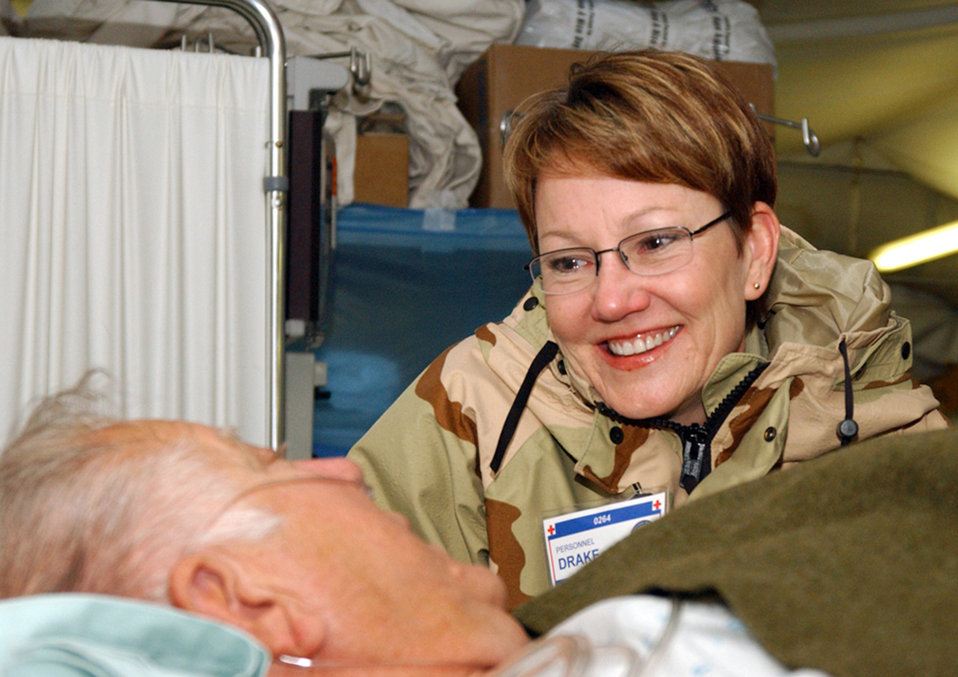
Staging facility puts wounded warriors on ?road to recovery?

Lt. Col. Beth Drake keeps company with Sam Lee on Tuesday, April 4, 2006, at the Air Force Theater Hospital at Balad Air Base, Iraq, while he waits to be moved to an aircraft. Colonel Drake is associate chief nurse of the Contingency Aeromedical Staging Facility; Mr. Lee is a labor foreman from a forward operating base